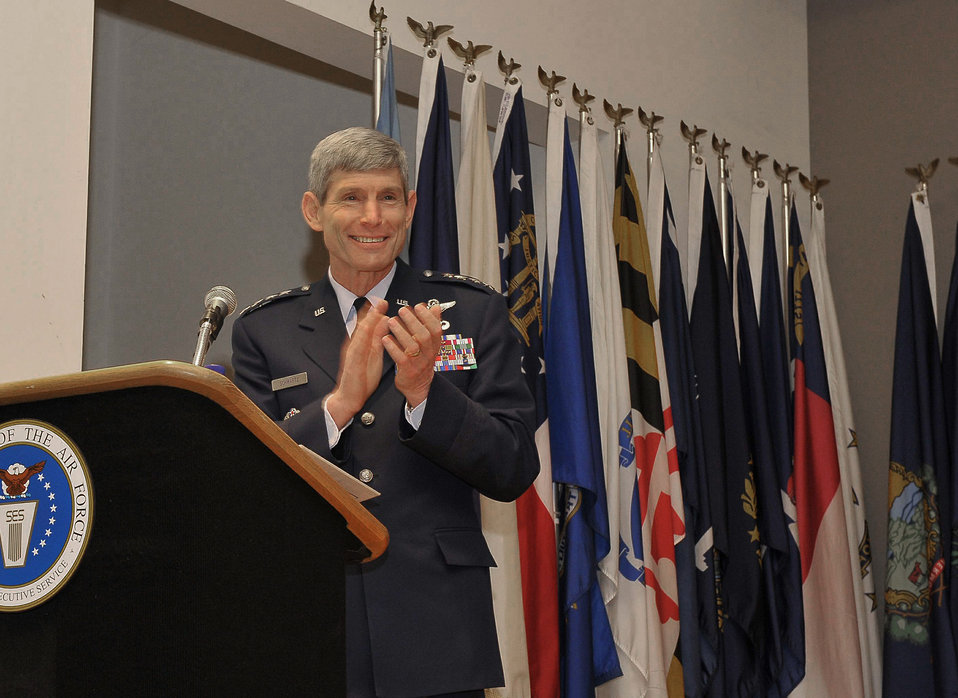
Presidential Rank Awards

Air Force Chief of Staff Gen. Norton Schwartz congratulates recipients of the 2008 Presidential Rank Award during the presentation ceremony April 17 at the Women's Memorial in Arlington Cemetery. The president of the United States annually awards distinguished and meritorious ranks to career members of the senior executive service, to senior leaders, and to scientific and professional government employees.